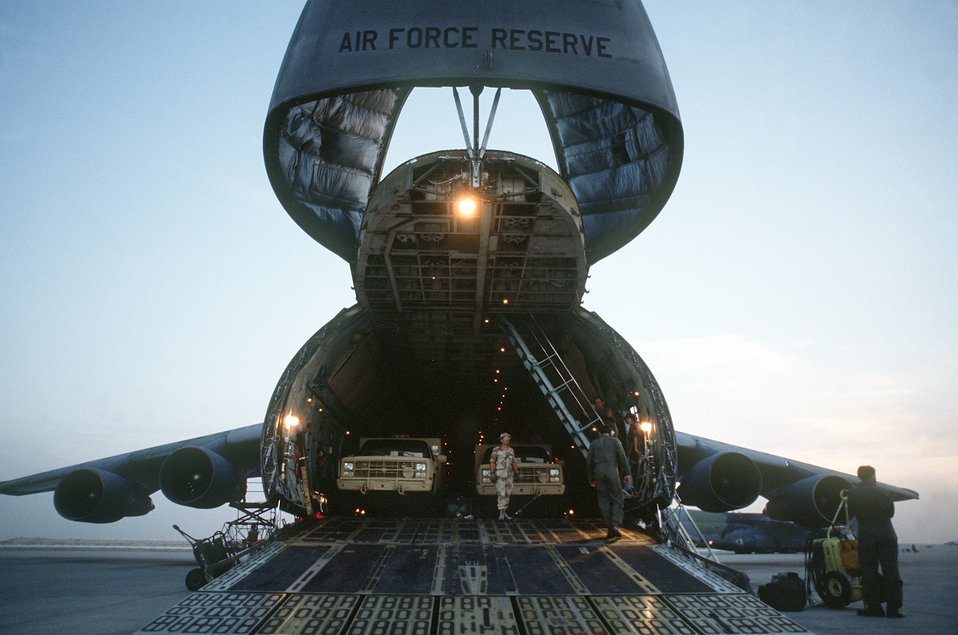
C-5A Galaxy in Operation Desert Shield

Military trucks are unloaded from the nose ramp of a C-5A Galaxy transport aircraft of the U.S. Air Force Reserve, Military Airlift Command, in support of Operation Desert Shield.